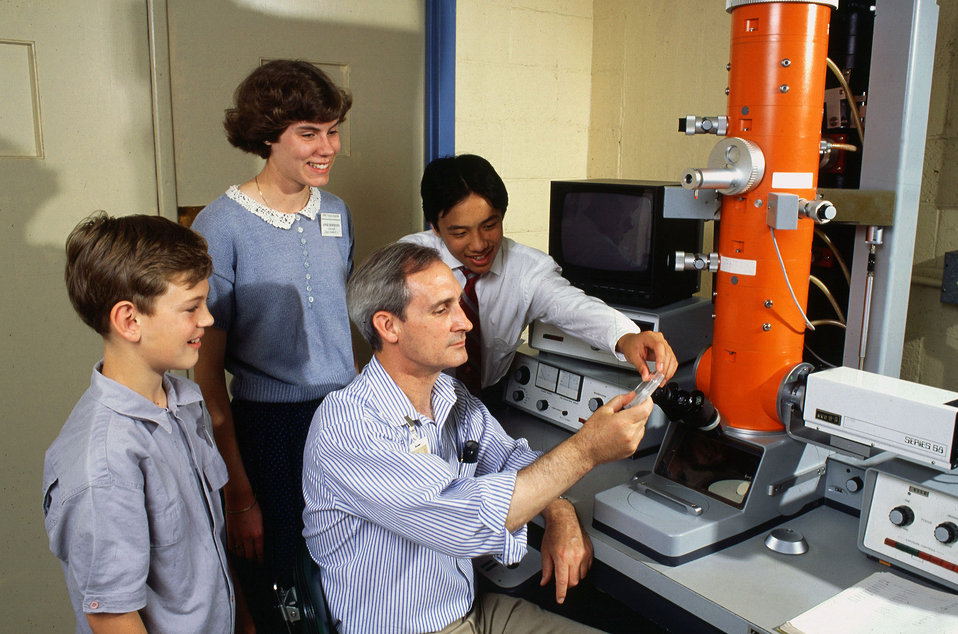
U.S. Department of Agriculture (USDA) Agriculture Research Service (ARS) biologist Peter Cooke explains the use of a transmission electron microscope to honor students (L-R) Conor Davis, Anne Hoffman, and Andrew Shieh.